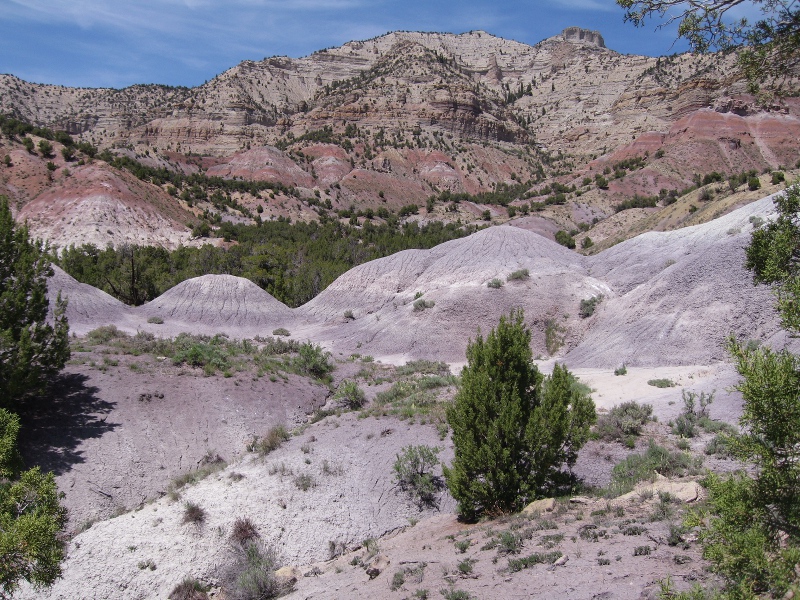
DeBeque Phacelia Habitat

DeBeque phacelia grow on these colorful soils near DeBeque, Colorado.

Photo credit: USFWS

...........................................................................

BACKGROUND:

DeBeque phacelia (Phacelia submutica)

DeBeque phacelia is a very small, low-growing plant with cream colored flowers and dark-green to purplish leaves. This member of the waterleaf family (Hydrophyllaceae) is an annual, emerging in early April and completing its one-year life cycle by mid-June. The plant is only found in a twelve-mile radius around the town of DeBeque, in Mesa and Garfield Counties, Colorado and is restricted to colorful exposures of chocolate to gray shades of alkaline clay soils within the Wasatch geologic formation. On these island-like barren exposures, it grows in small patches with few individuals. Individuals are known from 9 separate populations and numbers dramatically fluctuate from year-to-year, depending on climatic conditions.

DeBeque phacelia was first discovered in 1911 by naturalist George E. Osterhout, but extensive survey efforts to map the range of the species were not made until the 1980’s. Because of DeBeque phacelia’s limited range, small population size, and numerous threats to the species, it was proposed for listing as threatened under the Endangered Species Act in 2010 with a final listing expected in 2011. Threats to the species today include: oil and gas development, off-road vehicle traffic, heavy livestock use, proposed water projects, and potential effects from climate change.

To help manage and conserve DeBeque phacelia, research is underway to study the effects of dispersed development from oil and gas, off road vehicles, and grazing on the species. Another research project underway looks at the species’ reproductive strategy and collects information about its seed bank. In addition, this research is working to develop a method to survey for DeBeque phacelia year-round, using the seeds in the soil. Together, these projects will help land managers find ways to balance development with species conservation.

Eighty-seven percent of DeBeque phacelia populations are on public lands managed by the Bureau of Land Management and the U.S. Forest Service. The remaining twelve percent are on private lands. The Endangered Species Act does not protect plants on private lands and therefore, all conservation actions on private land are voluntary. Funding is available to landowners wanting to conserve the species. Please contact Gina Glenne or Ellen Mayo at 970-243-2778 for further information on this species and ways that you can help with conservation and recovery.